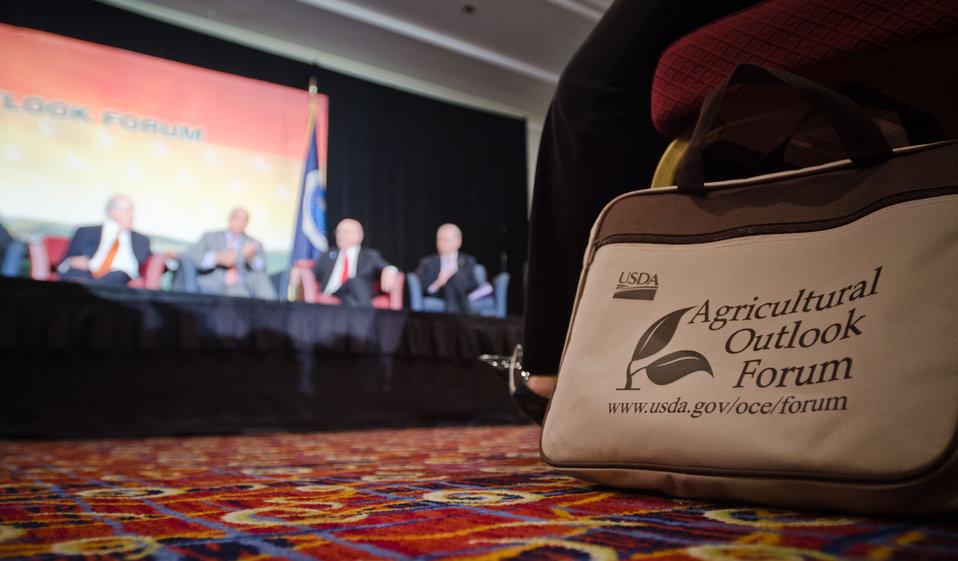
2012 Agricultural Outlook Forum, “Moving Agriculture Forward” in Arlington, VA, on Thursday, February 23, 2012.